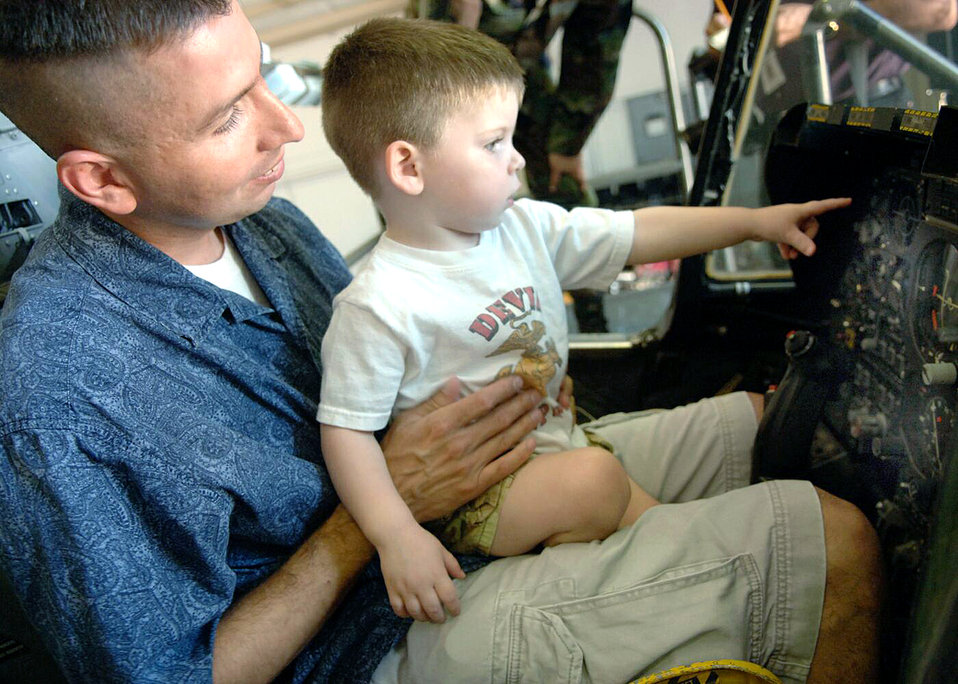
Make-A-Wish

Mark Holguin holds his son, Jacob, 2, as they sit in the cockpit of an A-10 Thunderbolt II during a tour of Davis-Monthan Air Force Base, Ariz., on July 17. The Make-A-Wish Foundation teamed with Davis-Monthan to offer a tour of the base for Jacob and other Make-A-Wish children as well as their families. The tour consisted of demonstrations by an explosive ordnance disposal robot, base fire department and a weapons load crew for an A-10.